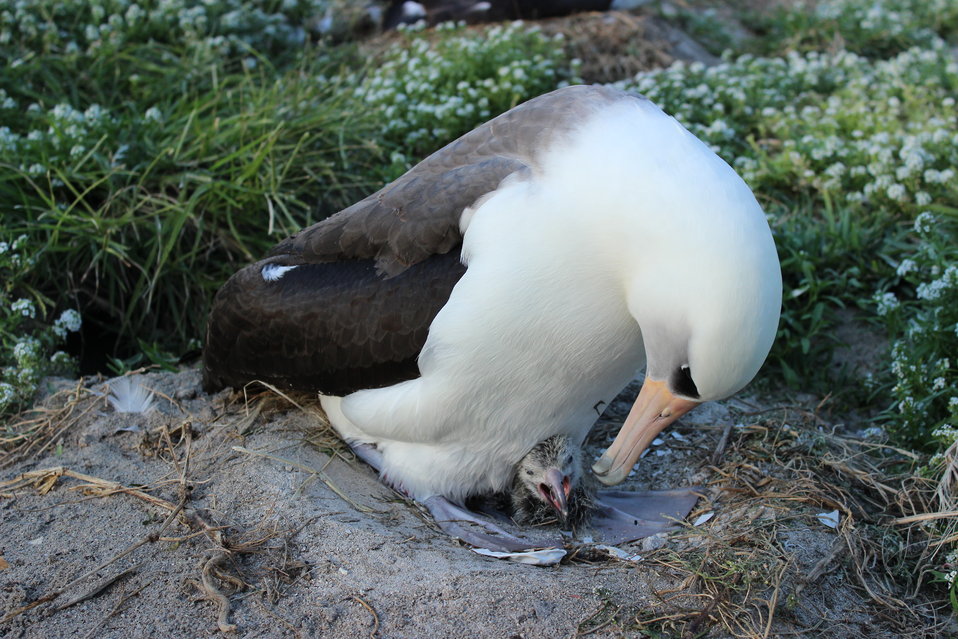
Wisdom and her newest chick on Midway Atoll NWR.

A Laysan albatross known as “Wisdom” – at least 63 years old – is once again busy rearing a chick on Midway Atoll National Wildlife Refuge within the Papahānaumokuākea Marine National Monument.